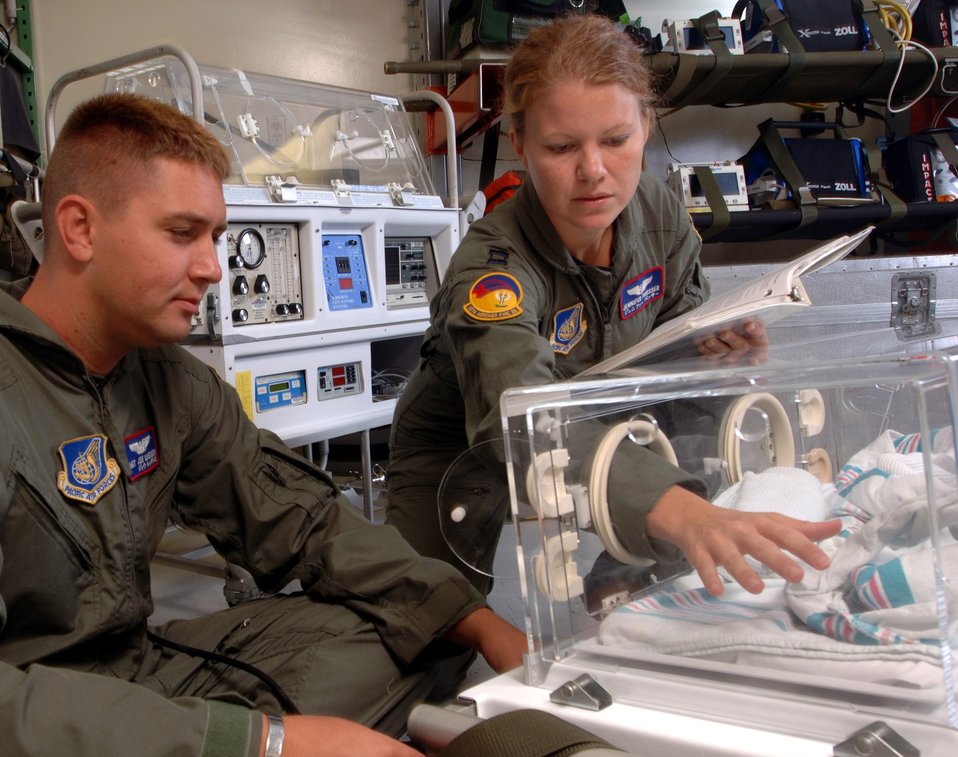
Kadena medics provide lifeline in air

KADENA AIR BASE, Japan -- Capt. Jennifer Prosser (right) checks the temperature inside a neonatal transportation system here, while Staff Sgt. Joe Lueders observes. The mission of the 18th Aeromedical Evacuation Squadron is to provide a flexible, seamless and responsive system capable of prompt and appropriate patient movement. Sergeant Lueders is a technician, and Captain Prosser is a flight nurse.